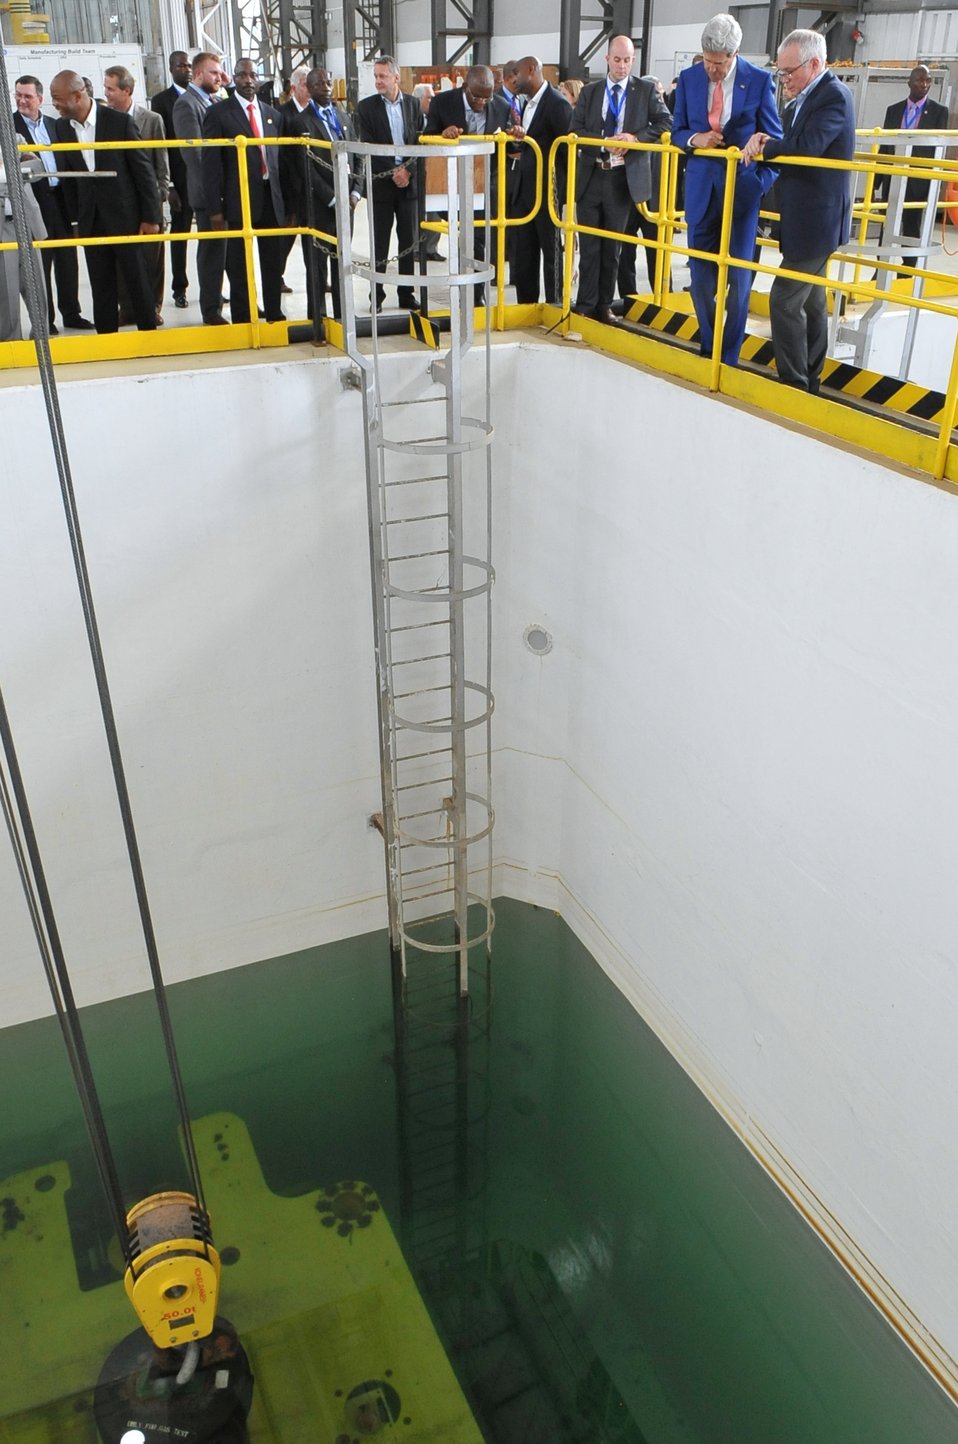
Secretary Kerry Examines Oil Device Testing Tank at GE Facility in Angola

U.S. Secretary of State John Kerry peers into a water tank used to test oil flow regulators as he tours a General Electric facility in the Sonil oil services compound in the Port of Luanda, Angola, on May 4, 2014.